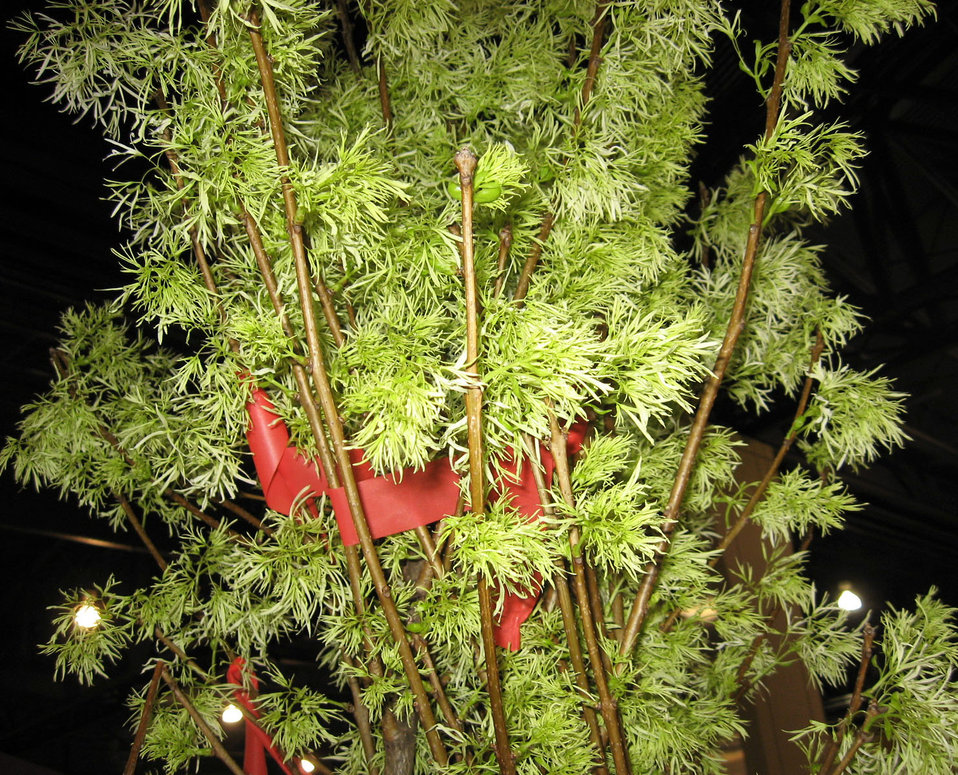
Fringetree

Chionanthus virginicus (Fringetree), a native plant

Learn more about EPA’s Exhibit at the 2010 Philadelphia International Flower Show:
www.epa.gov/reg3esd1/garden/flower show.htm
www.epa.gov/reg3esd1/garden/flower show plants.htm
www.epa.gov/reg3esd1/garden/pdf/flowershow2010.pdf (6 pp, 864K)